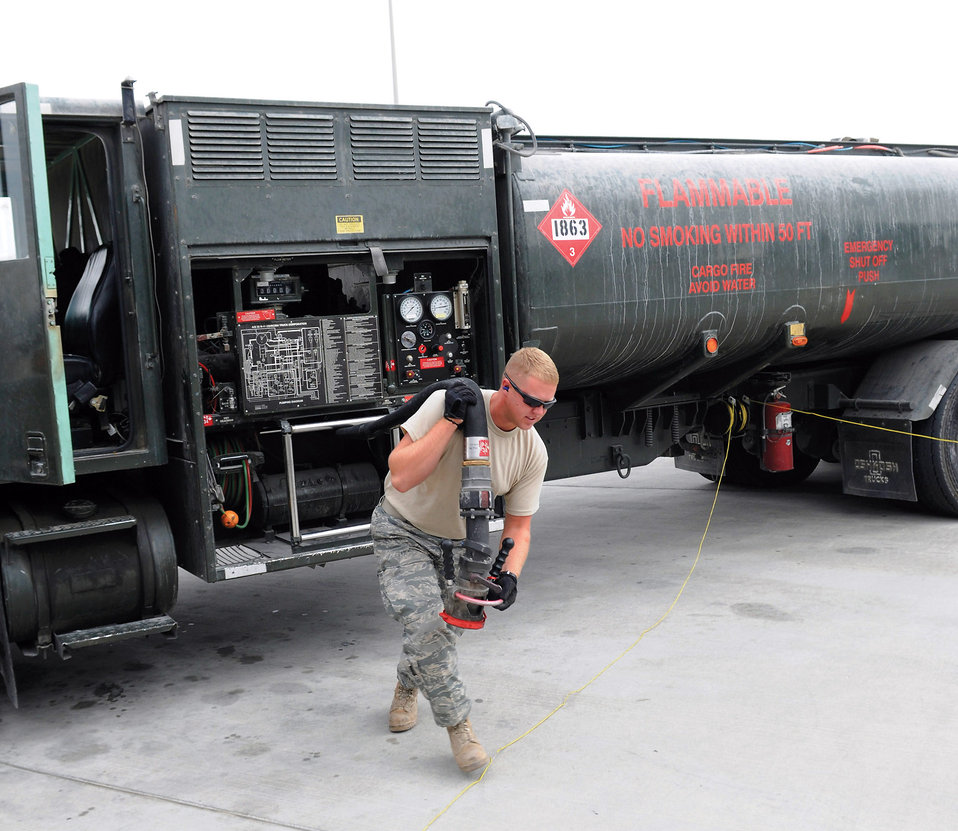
Airmen fuel the flight

Airman 1st Class Bradley Dean unreels a fuel hose prior to fueling a KC-135 Stratotanker at an air base in Southwest Asia. Airman Dean is a native of Tennessee Colony, Texas, and deployed from Moody Air Force Base, Ga. He is a fuels apprentice assigned to the 379th Expeditionary Logistics Readiness Squadron.